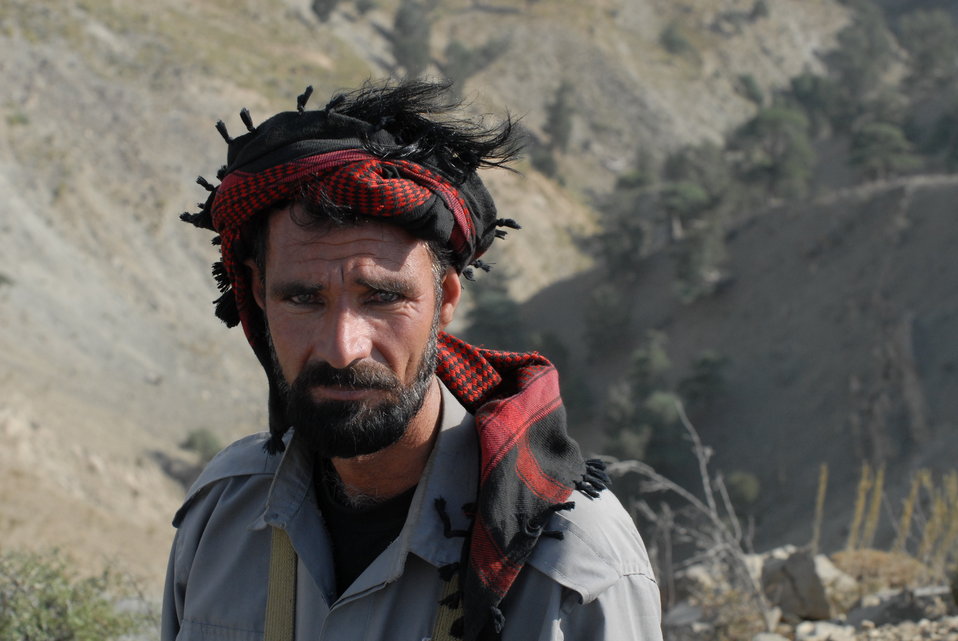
'On the Road' in Paktya Province